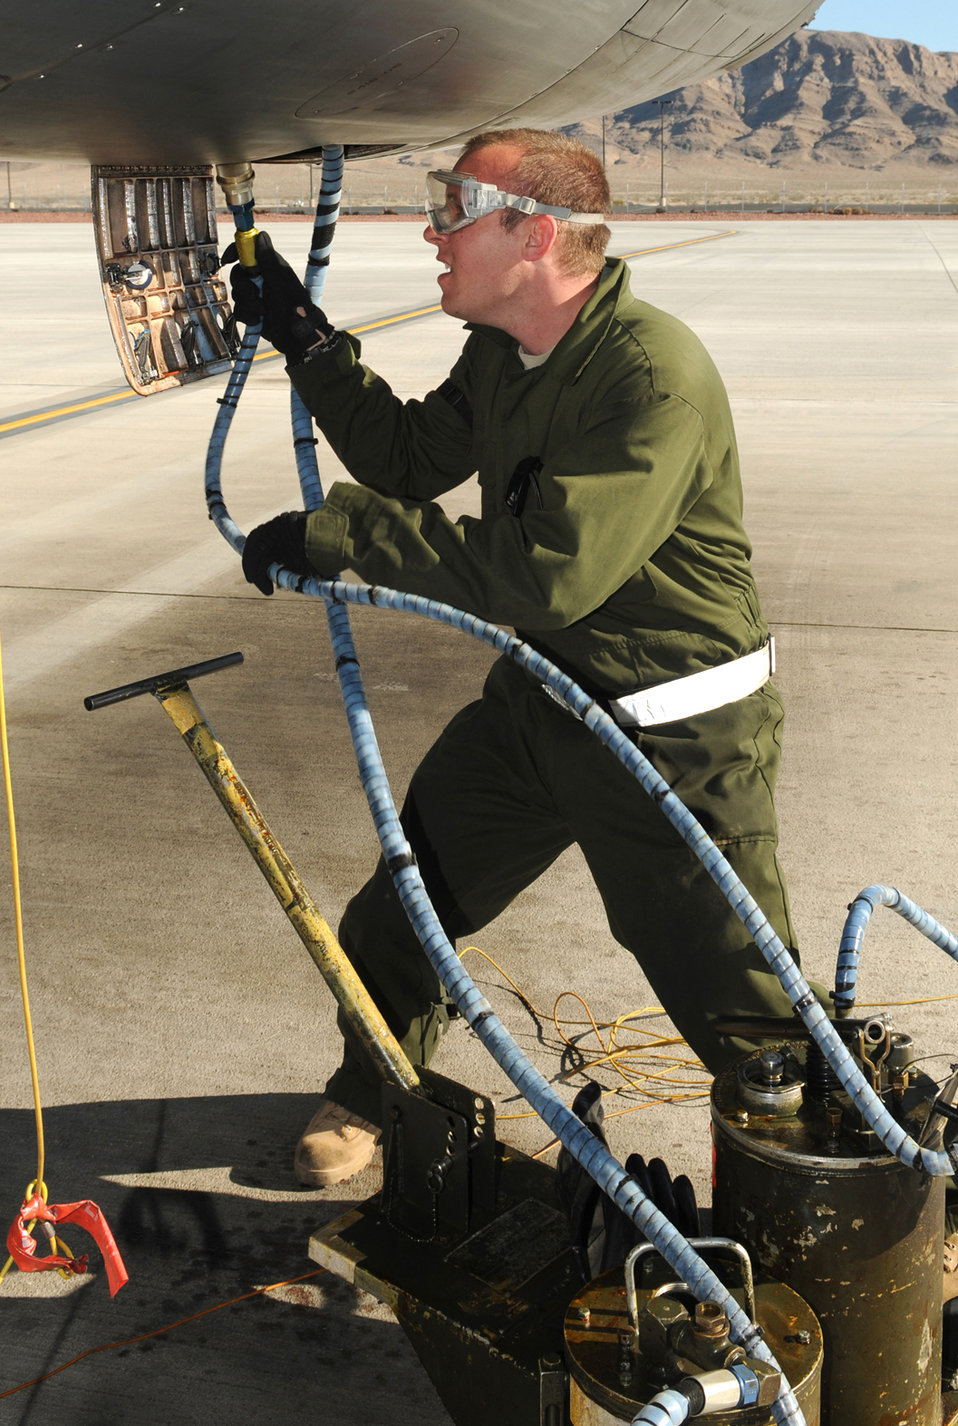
Red Flag 11-2

Airman 1st Class Mitch Sweeney pumps fresh oil into a gearbox on a B-1 Lancer after a mission Jan. 26, 2011, at Nellis Air Force Base, Nev. Airman Sweeney is deployed from in support of Red Flag 11-2, a combined exercise that provides a realistic combat training environment to the U.S. and its allies. Airman Sweeney is a 28th Aircraft Maintenance Squadron crew chief.